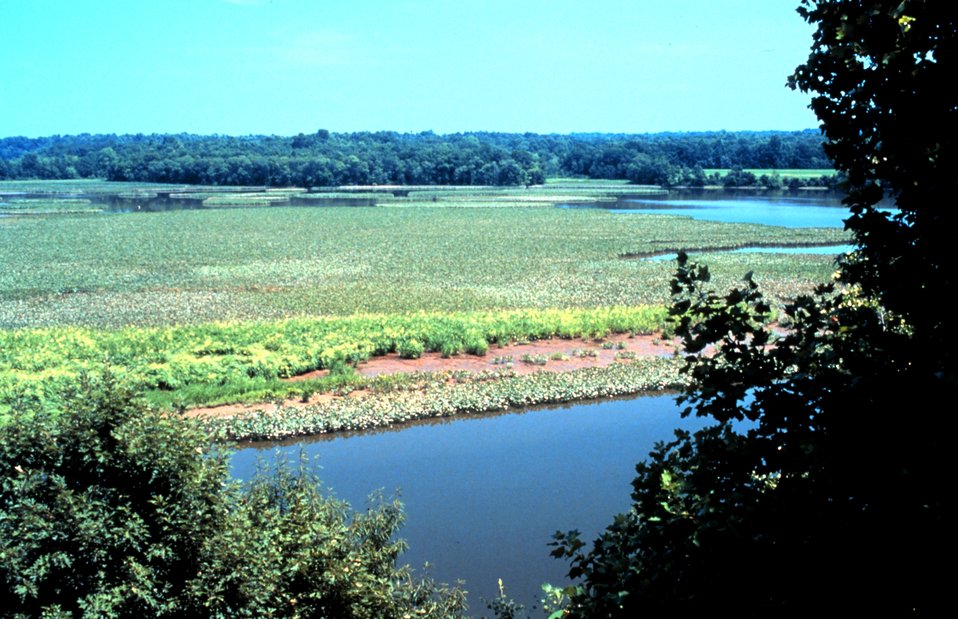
Chesapeake Bay - Maryland National Estuarine Research Reserve.